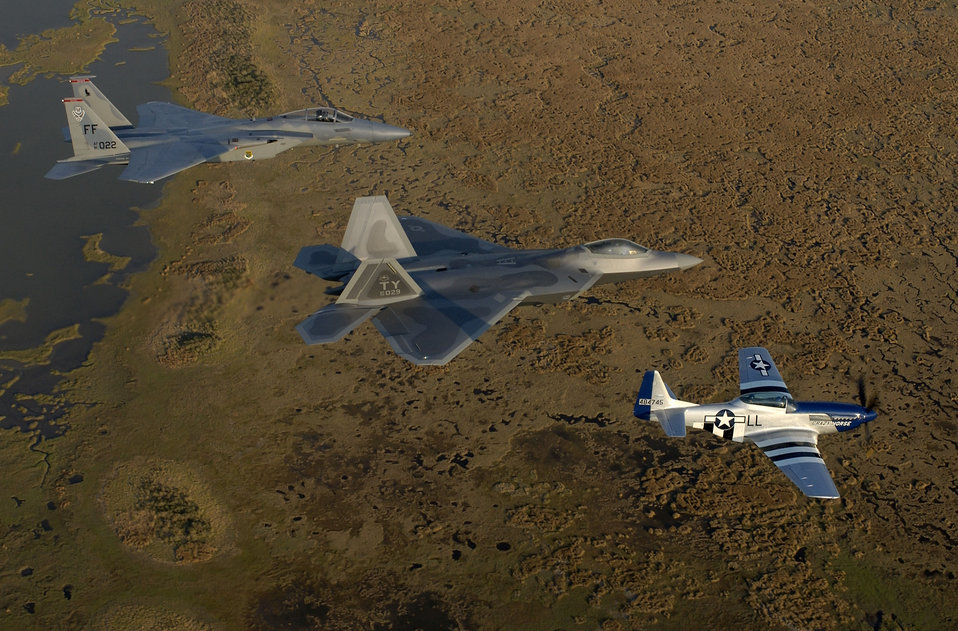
The heights of heritage

OVER VIRGINA (AFPN) - An F-15 Eagle, F/A-22 Raptor and P-51 Mustang train for heritage flight formation flying here April 27. Maj. Michael Shower, piloting the F/A-22, is getting his checkout ride for the formation with P-51 Pilot Maj. Gen. Mike Decuir, the Air Combat Command operations director, and Capt. Jason Costello, a 1st Fighter Wing demonstration team pilot.